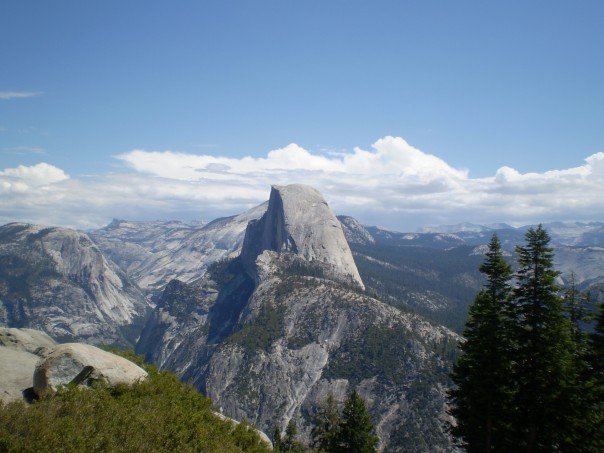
Uploaded by request of Michael Higginbotham

Taken in Yosemite National Park, CA on top of Glacier Point

Shows a commanding view of Half Dome (which is the the huge rock split in half). The view is one in a million, and you really have to be there to appreciate the real beauty of the Sierra Nevadas. The view from Glacier Point is panaromic, and you can see for miles and miles. There really isn't a scale to show how big Half Dome is, but it takes a high powered viewing glass to show little 'specks' of people walking around on top of Half Dome.